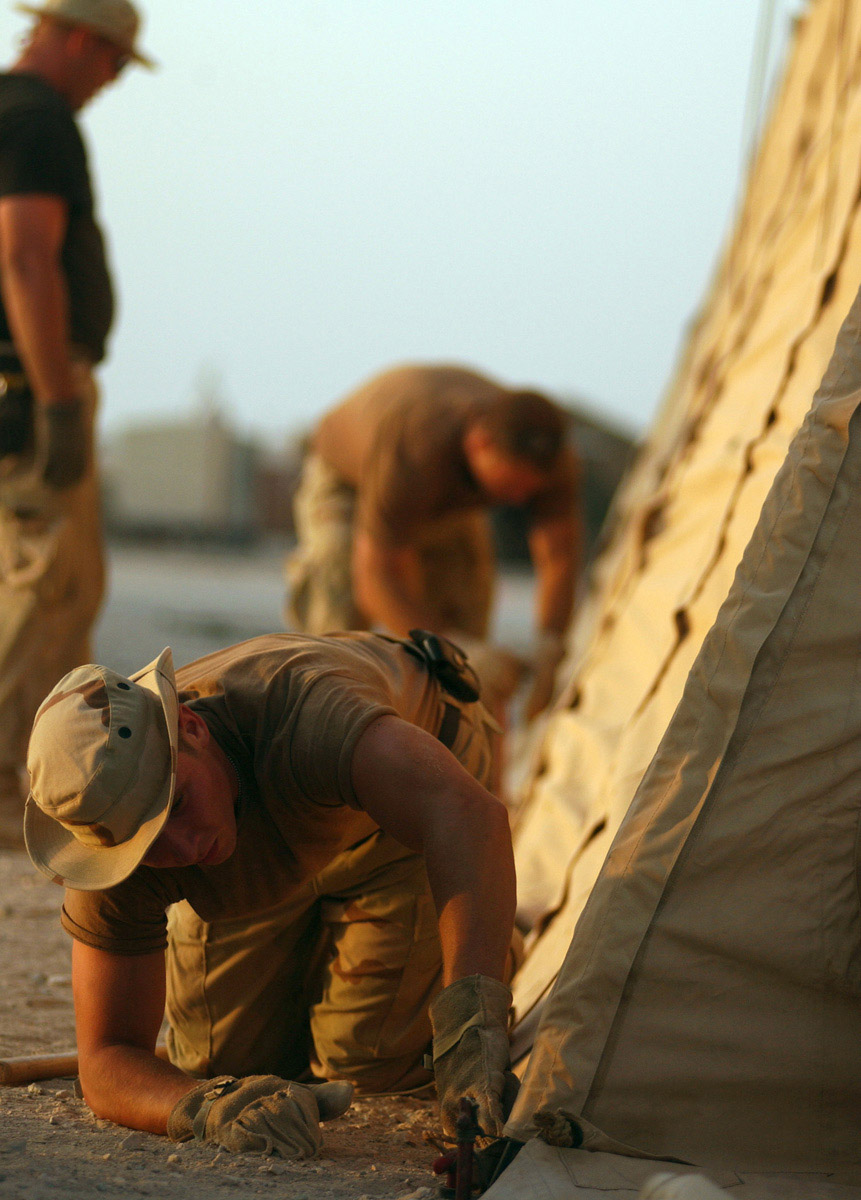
Pischoff

OPERATION ENDURING FREEDOM -- Airman 1st Class Jason Pischoff, 2nd Civil Engineer Squadron, Barksdale Air Force Base, La., helps put up tents at a forward deployed location in support of Operation Enduring Freedom. He, along with many other Air Force members, arrived with more than 24 hours of no sleep and 12 more hours of work ahead.